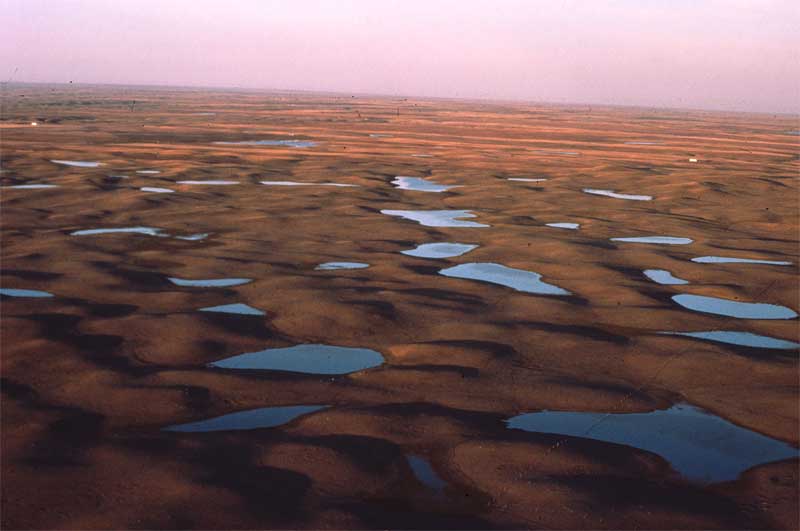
Bowdoin Wetland Management District

Prairie Potholes and native prairie in the Bowdoin WMD.